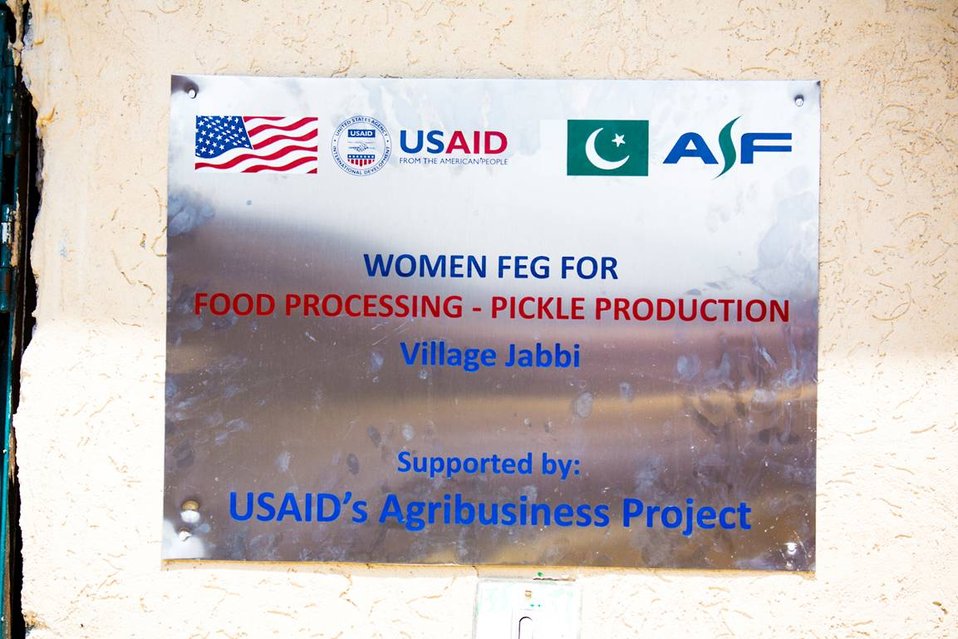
USAID's Agribusiness Project Women FEG for Food Processing - Pickle Production at Village Jabbi

The support to these women entrepreneurs is part of USAID's Agribusiness Project, which started in late 2011 with a $89.4 million grant to the Agribusiness Support Fund, a Pakistani not-for-profit private sector organization. The Agribusiness Project is expected to provide assistance to thousands of Farmer Enterprise Groups (FEGs) all over Pakistan.
www.usaid.gov/pk/db/sectors/growth/project 750.html